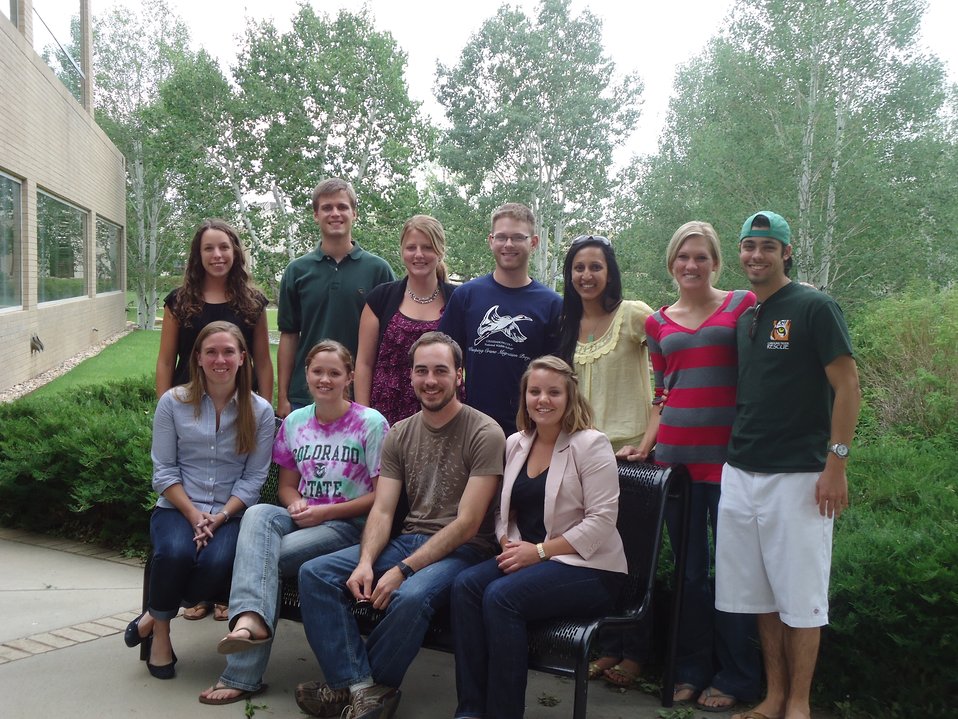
2011 wilderness fellows

Group photo of the 2011 Wilderness Fellows during their summer training session at Ft. Collins, CO